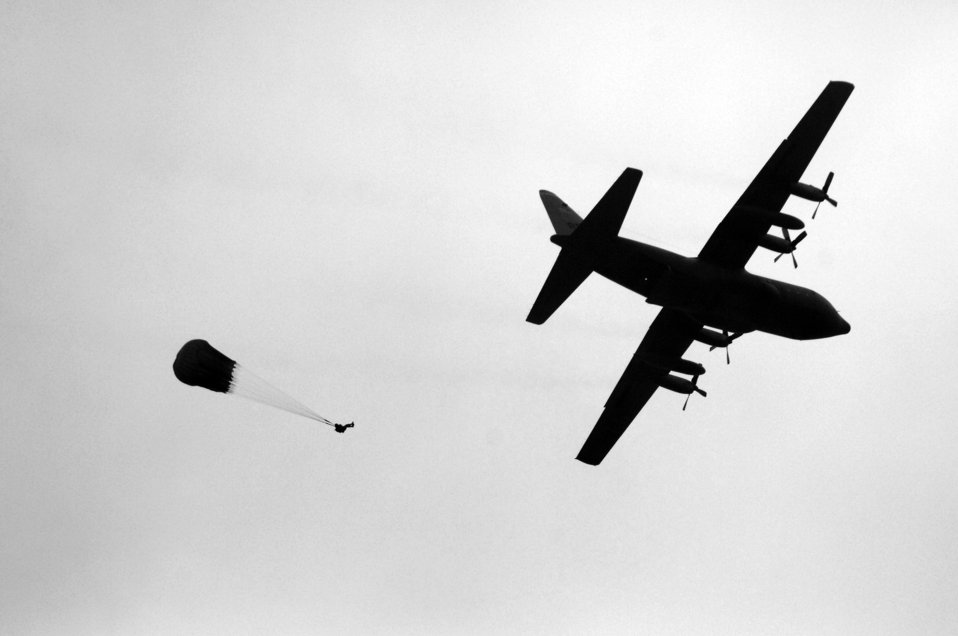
Multinational training

Paratroopers from the United States, Belgium, France, Germany, Italy and the Netherlands jump from a C-130 Hercules near Alzey, Germany, on Thursday, April 27, 2006. Three days of jumps were scheduled using air transports from the 37th Airlift Squadron at Ramstein Air Base, Germany.